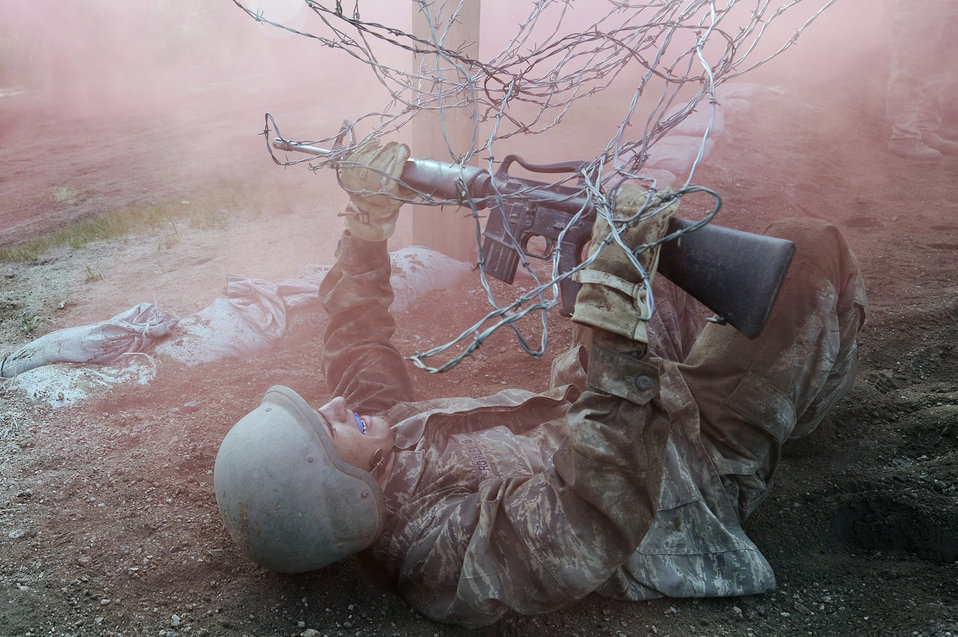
I will survive!

Air Force Academy Basic Cadet Evan Rowley inches his way under barbed wire in the Jacks Valley Assault Course July 21 near Colorado Springs, Colo. Basic cadet training started June 25 and continues through Aug. 1.